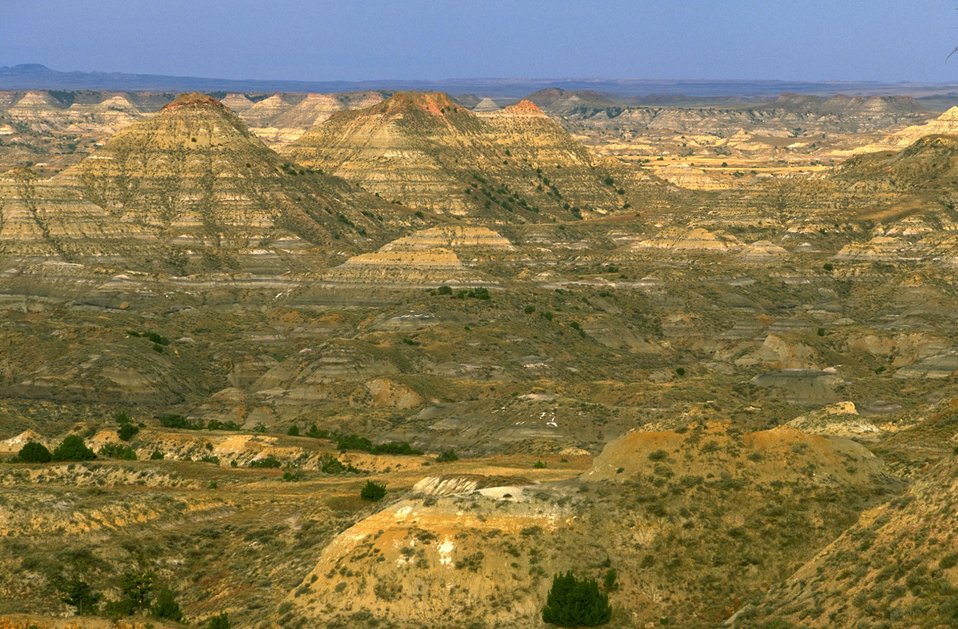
Picturesque view of the Terry Badlands